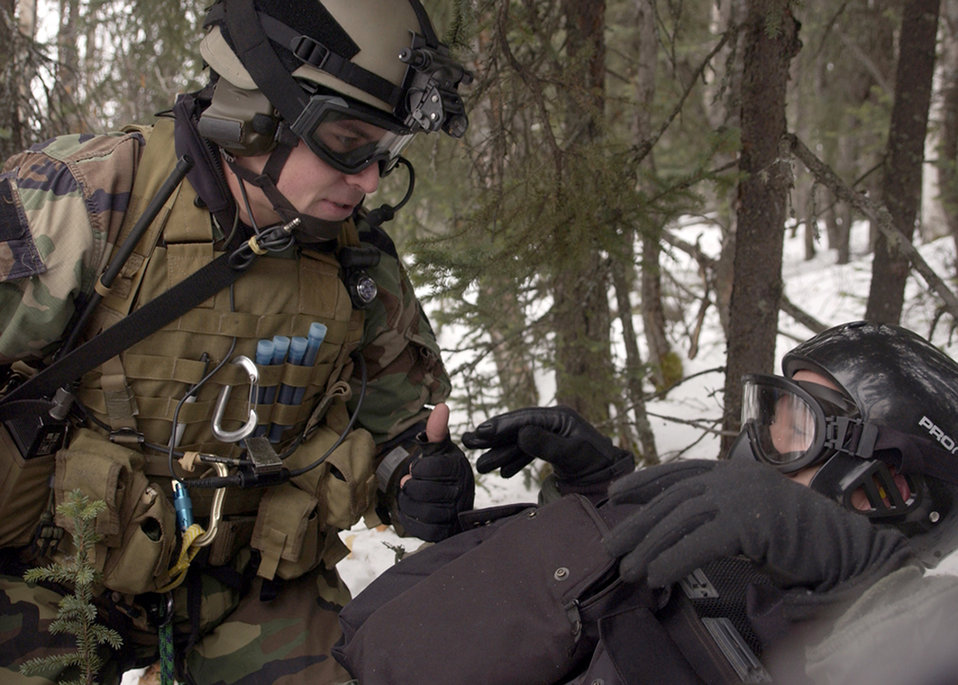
Cope Thunder 06-1

EIELSON AIR FORCE BASE, Alaska -- A pararescueman communicates with a rescued pilot during a combat search and rescue training mission during the Cope Thunder 06-01. The